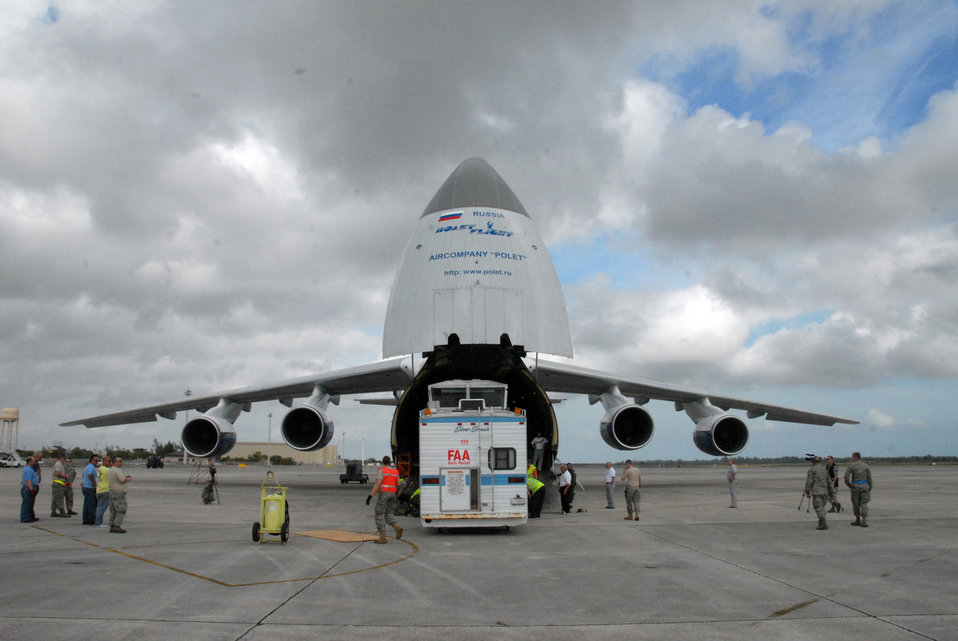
Air Force, FAA use Russian aircraft to move mobile air traffic control tower

A mobile air traffic control tower is loaded onto a Russian Antonov An-124 cargo plane at Homestead Air Reserve Base, Fla., Jan. 21, 2010. The mobile air traffic control tower will increase the efficiency of aid being delivered to earthquake victims in Haiti.